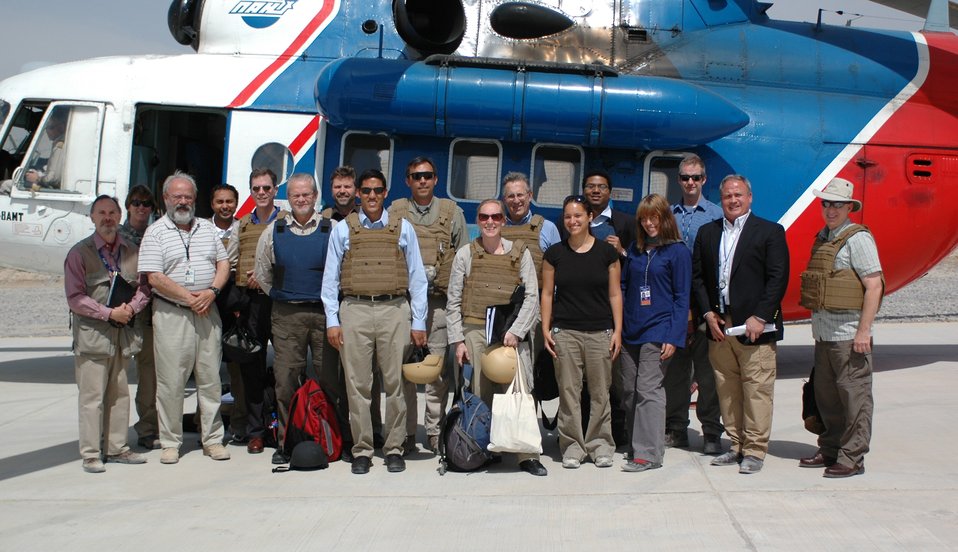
Dr Shah Visits Kandahar April 9, 2010